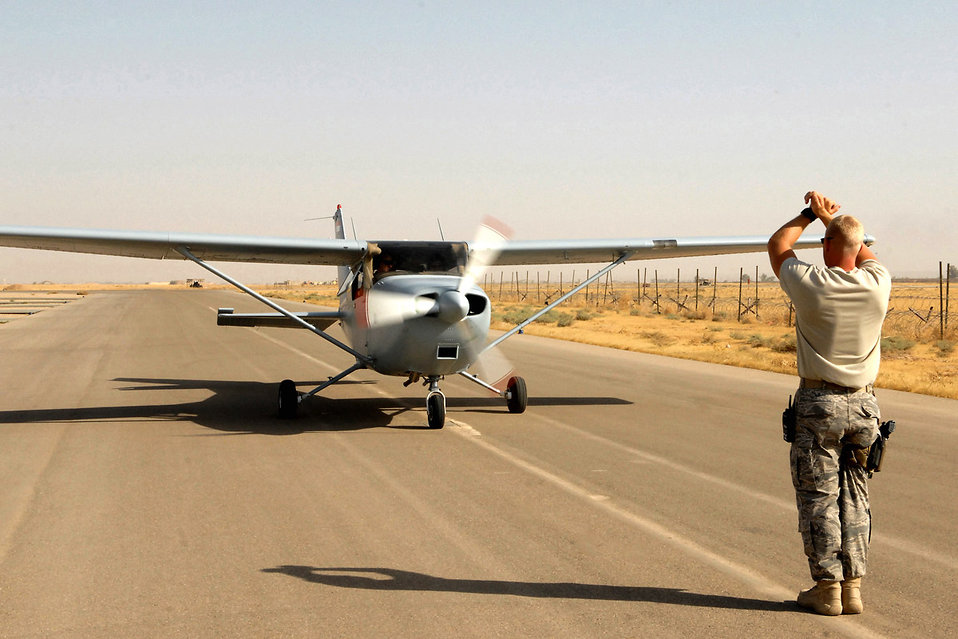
Iraqi air force reaches 2,000-hour milestone

Staff Sgt. Kevin Bremmer marshals a Cessna 172 July 13 at Kirkuk Regional Air Base, Iraq. The aircraft was flown by 2nd Lt.